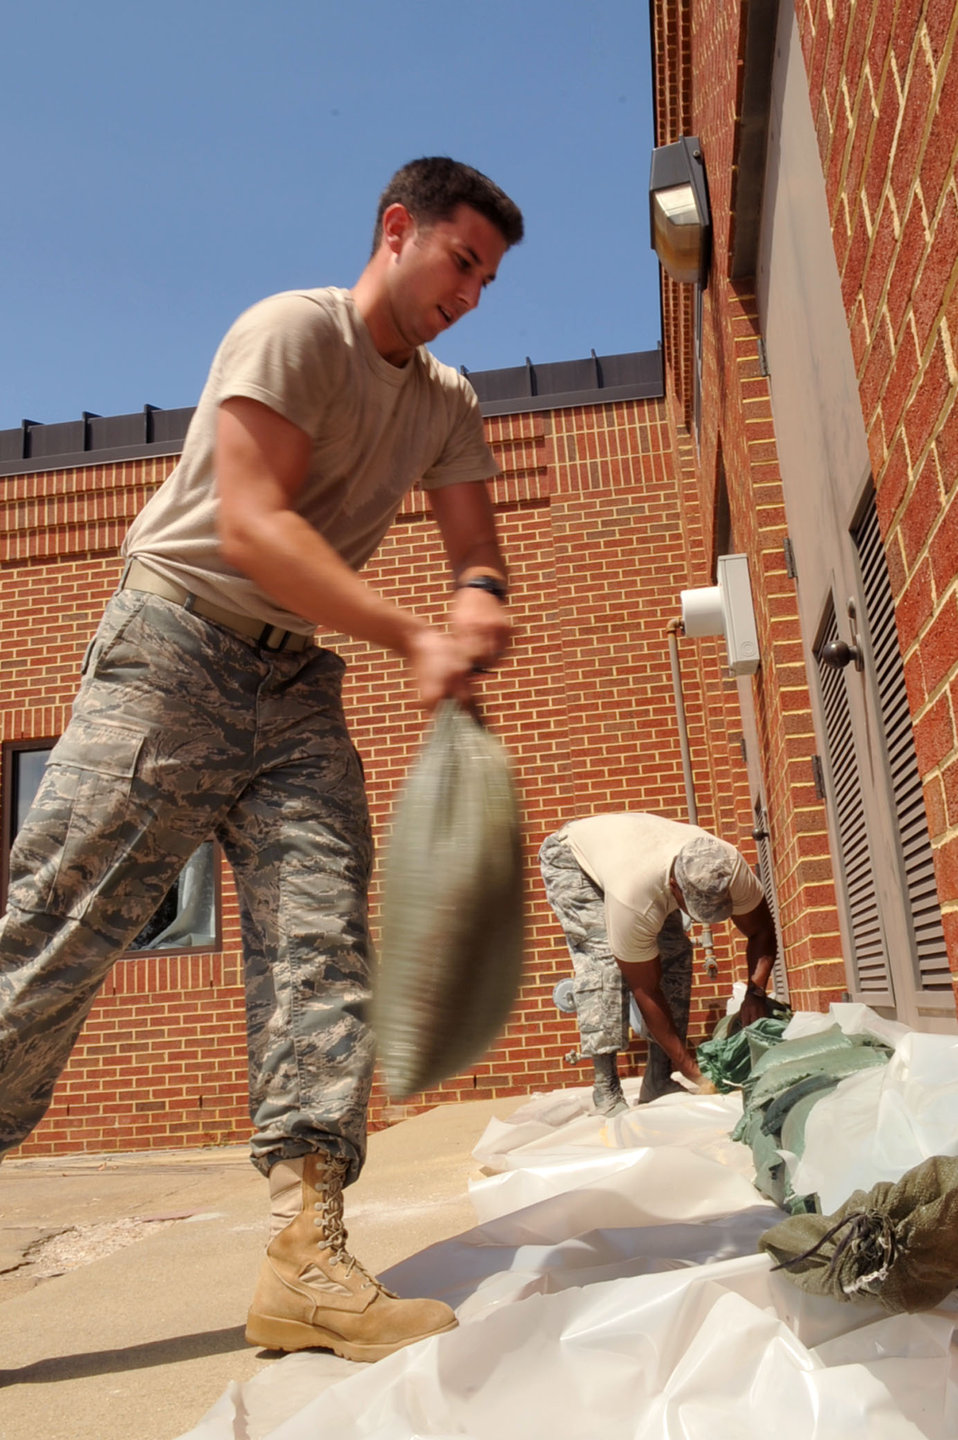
Preparing for the storm

1st Lt. Phill Bergeron throws down a sandbag in front of the entrance of the Air Force Targeting Center, Aug. 25, 2011 at Langley Air Force Base, Va. Bergeron is the chief of standards and evaluation with the 15th Intel Squadron.